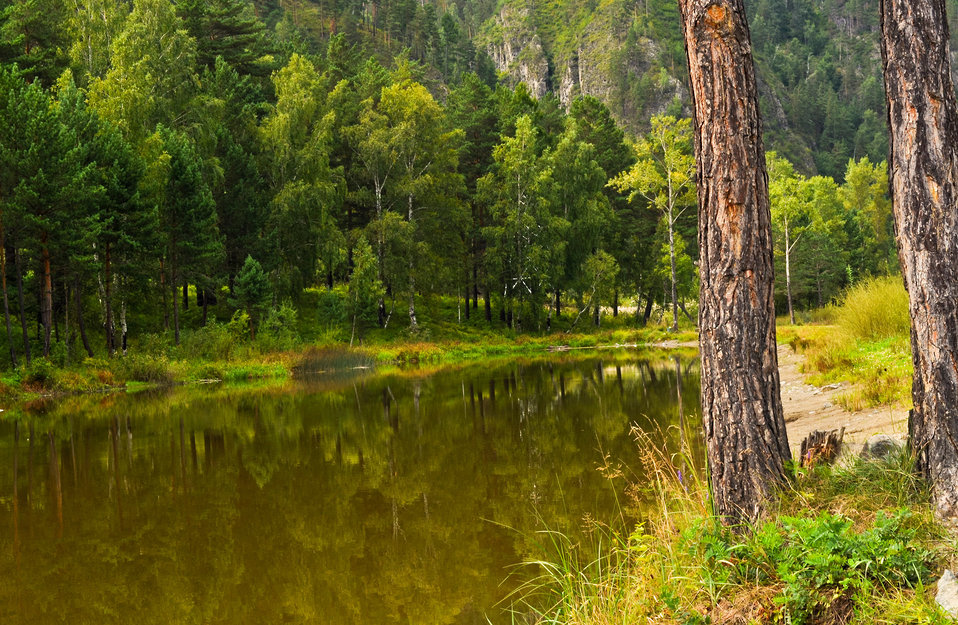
Rest on the lake

Large trees on the background of water and forest in the distance.